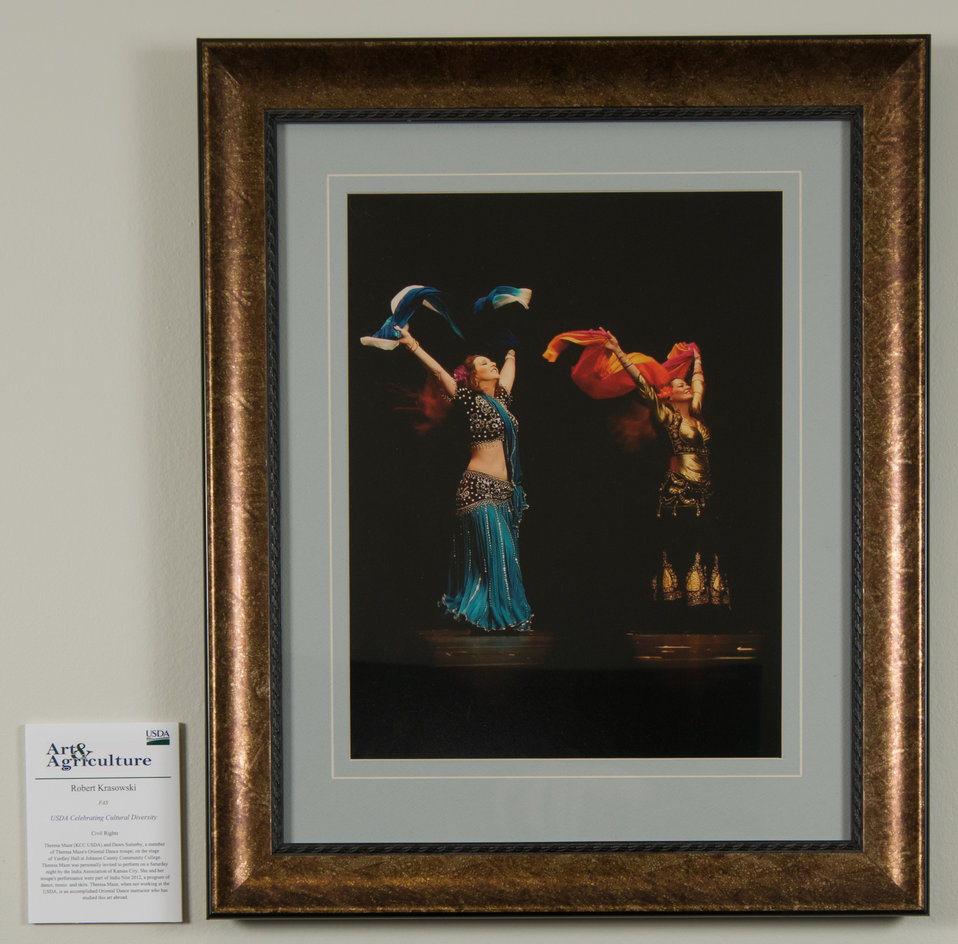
Online Viewer's Choice entries of the 2013 Art & Agriculture, Tuesday, July 9, 2013, in the South Building, Washington, D.C. Themes were expressed by employees from across the department and the contest was open to full-time and part-time USDA employees. Winning artwork will be displayed till the end of the year. U.S. Artistic expression is a creative outlet that is vital for an individual to grow and develop.